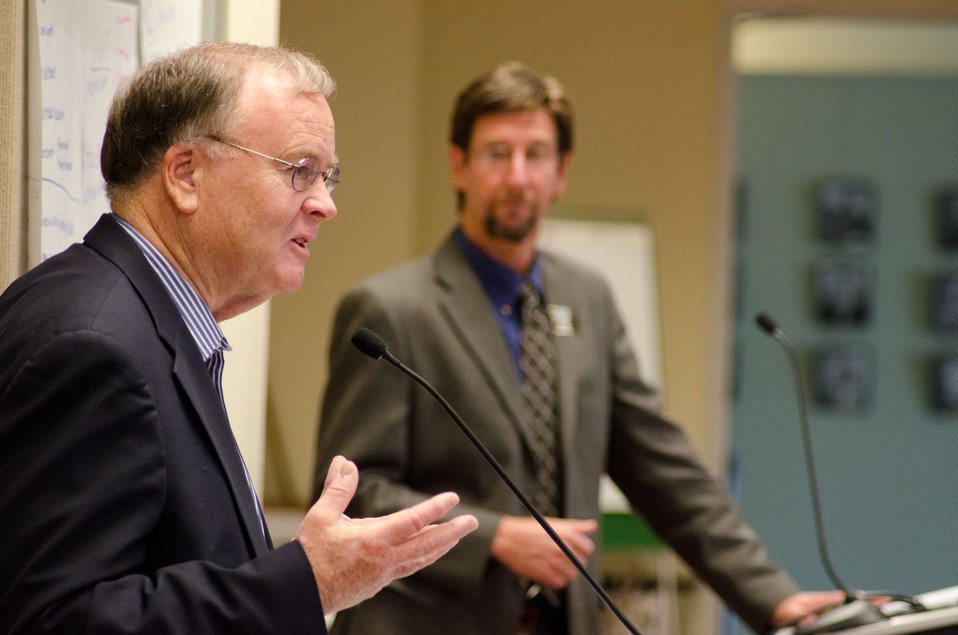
Congressman Sam Farr (left) highlighted what he will be taking away from observing and listening to several teams of federal representatives working together, during the America’s Great Outdoors Initiative (AGO) Monterey Bay Pilot Area Focus Session, moderated by U.S. Department of Agriculture Natural Resources Conservation Service Assistant State Conservationist Daniel Monutjoy (right) in the City of Watsonville’s Civic Plaza in California, on Friday, June 17, 2011. Congressman Sam Farr, U.S. Department of Agriculture and representatives of other Federal and state resource management agencies came together to identify partnership opportunities and determine actions for protection and enhancement of water quality and publicize voluntary stewardship in the watersheds that drain into the Monterey Bay National Marine Sanctuary. This area includes the counties of San Mateo, Santa Cruz, Santa Clara, San Benito, Monterey, and San Luis Obispo. Key questions identified existing multi-county or multi land use partnerships; what is not being done; possible partnerships - collective resources to maximize the benefits to natural resources and communities; and additional resources that organizations can bring to maximize AGO. President Barack Obama signed the initiative on April 16, 2010 to develop a 21st Century conservation and recreation agenda.